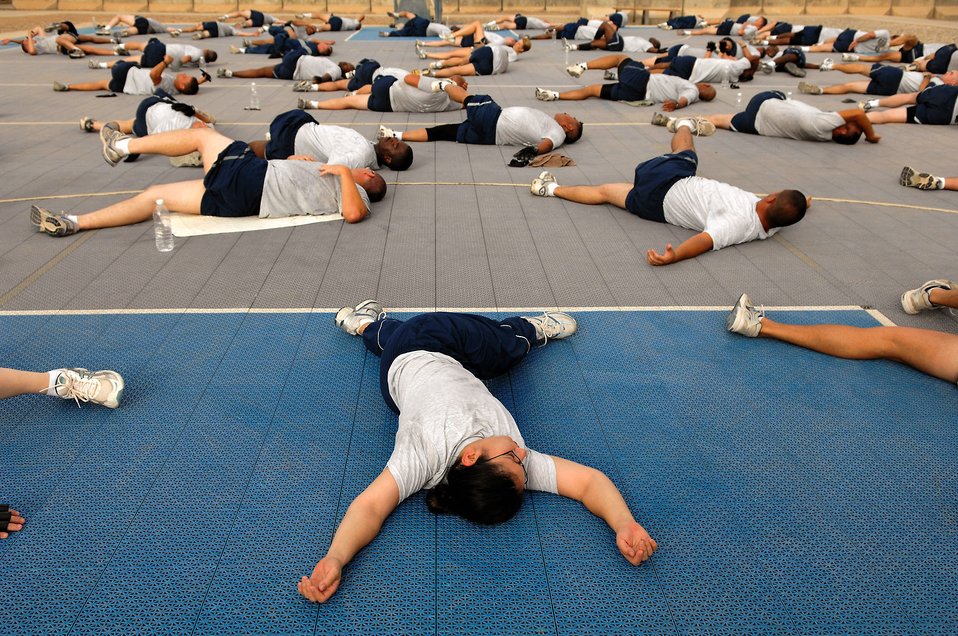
Horsepower

Airmen assigned to the 557th Expeditionary RED HORSE Squadron stretch after a group workout session June 3 at Balad Air Base, Iraq. The unit meets each morning, workout as a unit and promote the Air Force's fit-to-fight lifestyle . The 557th ERHS staff provides direct support to the Army' 20th Engineer Brigade for large-scale construction projects throughout Iraq.